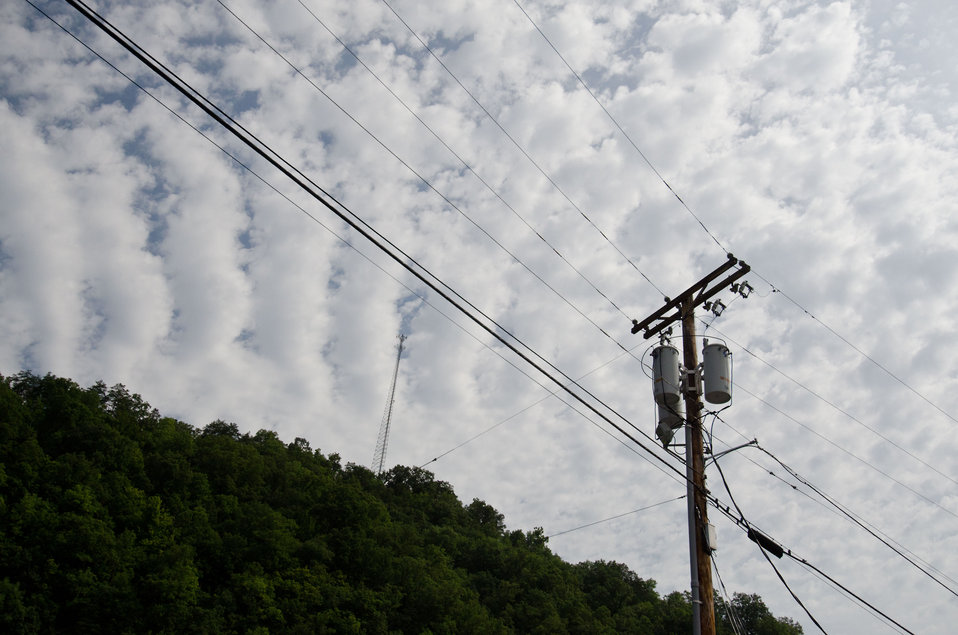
Power and communications lines between Lexington and Pikeville, KY, on Tuesday July 12, 2011. This is the Eastern Kentucky region of the Appalachian Mountains.